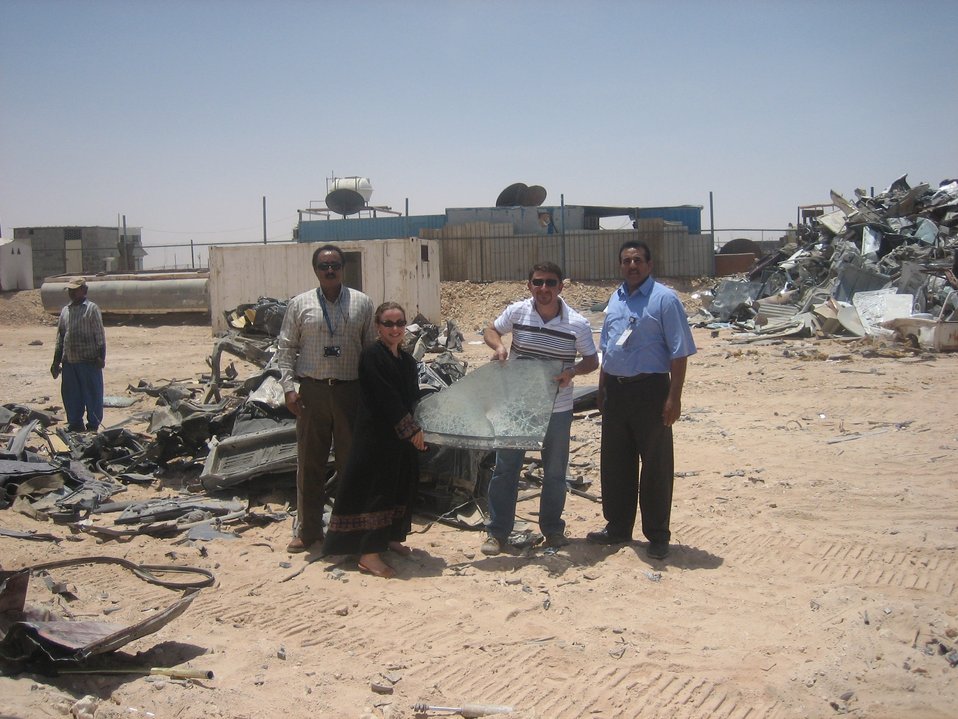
Legal Attaché Staff Witness the Demolition of Vehicles

(From left) Motor Pool Supervisor Noor Abdulle AGSO Miriam Asnes, a member of the Legal Attaché staff, and Motor Pool Driver Mansoor Naghi witness the demolition of two armored vehicles as authorized by the U.S. Department of State in Saudi Arabia, July 19, 2009.